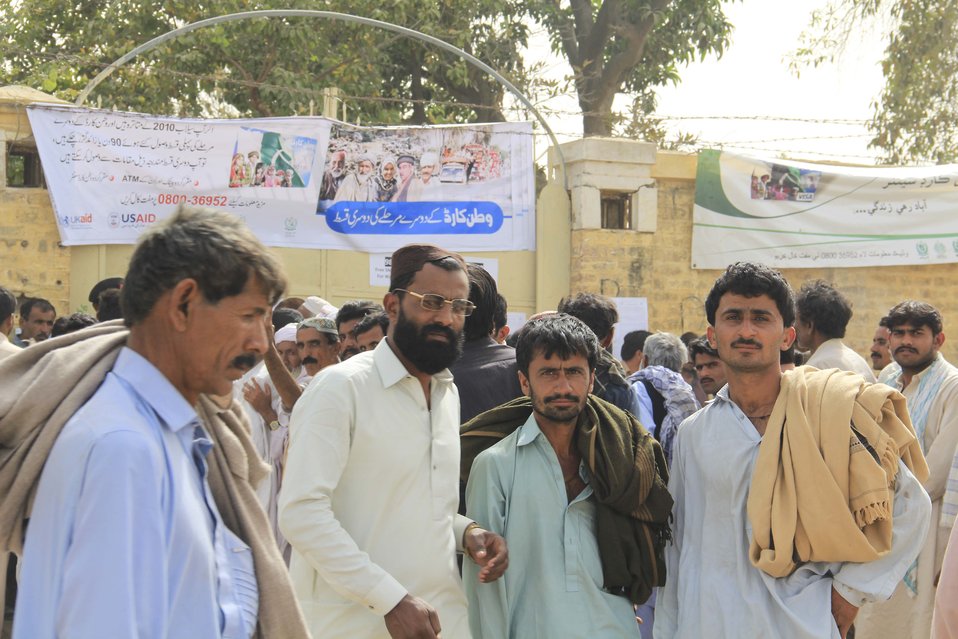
Citizens Damage Compensation Program